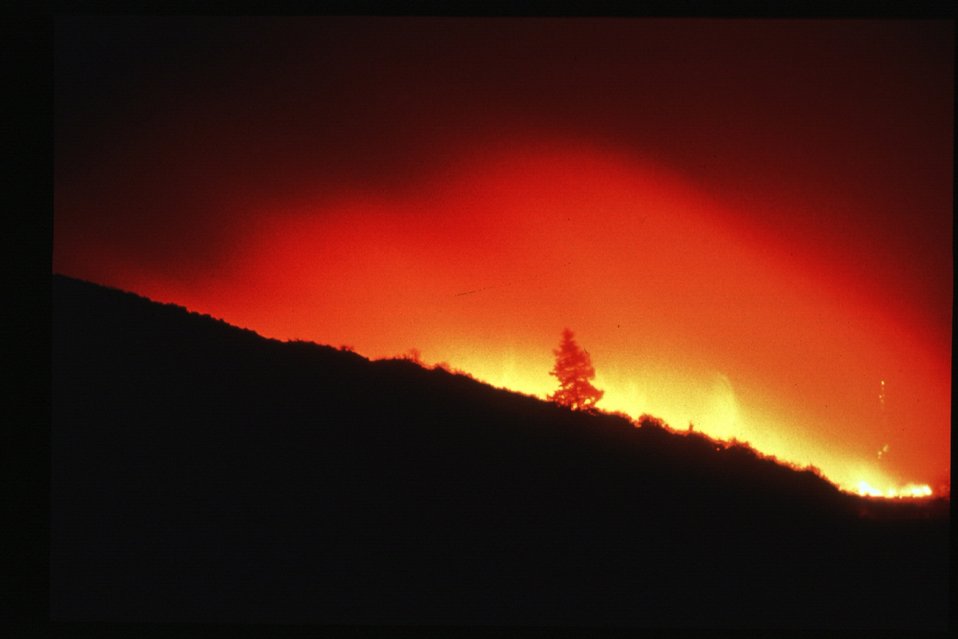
Boise Foothills Fire Danskin Mountains and South Fork of Boise River Four River Field Office LSRD Lower Snake River District